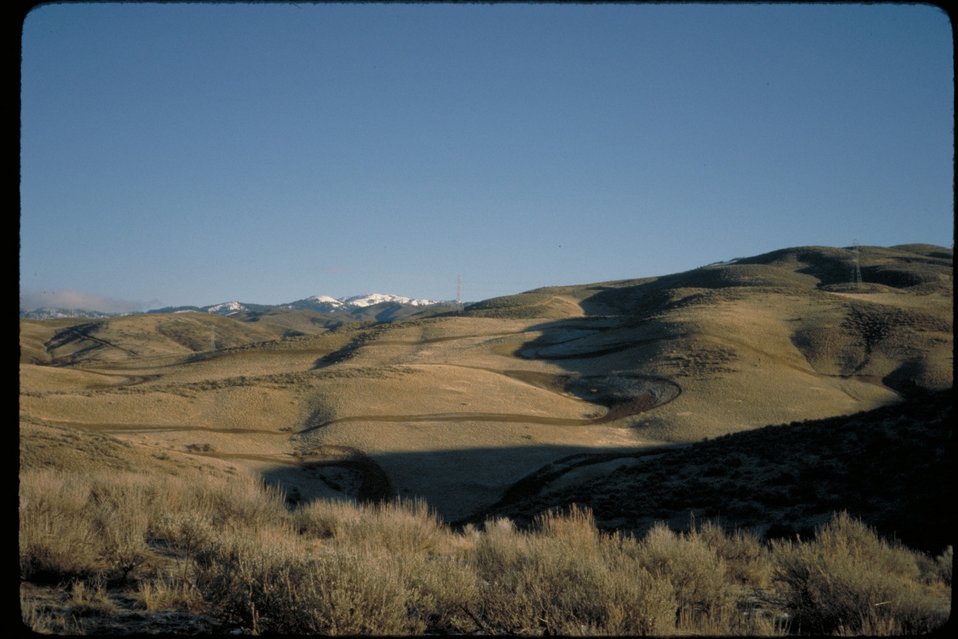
Motocross trail Boise Front Four Rivers Field Office LSRD Lower Snake River District